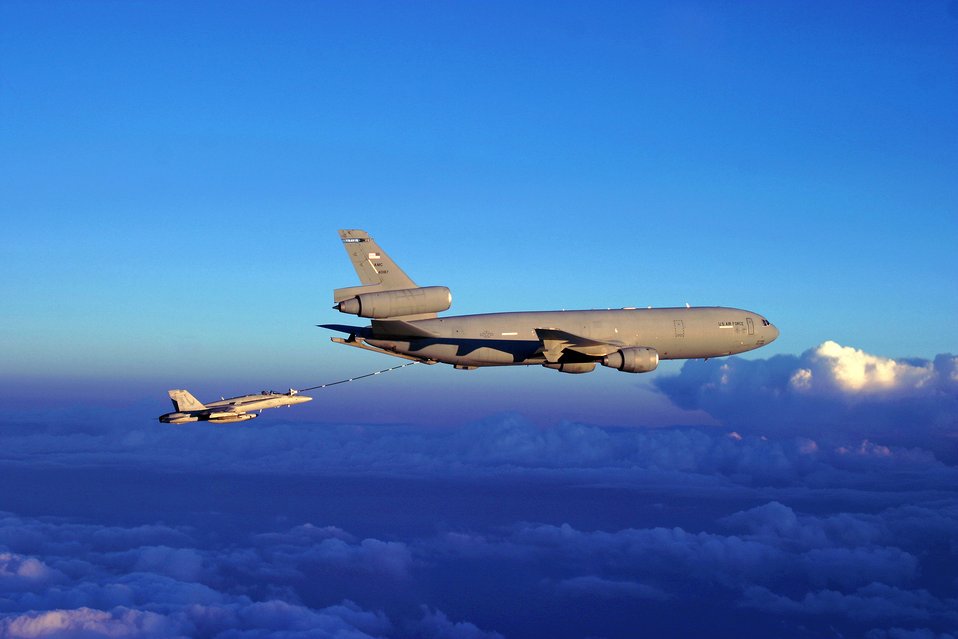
Airpower summary for Sept. 16, 2007

A Navy F/A-18 Hornet fighter receives fuel from a KC-10 Extender over Afghanistan. On Sept. 15, coalition tankers flew 46 sorties and off-loaded approximately 2.4 million pounds of fuel to 210 receiving aircraft.